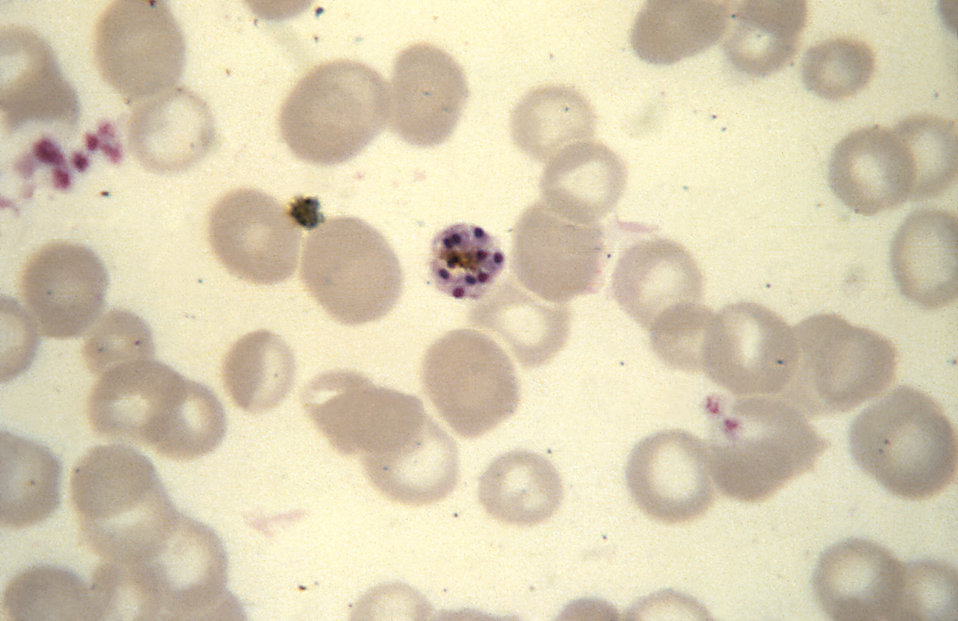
This thin film micrograph depicts a mature Plasmodium malariae schizont containing 10 merozoites.